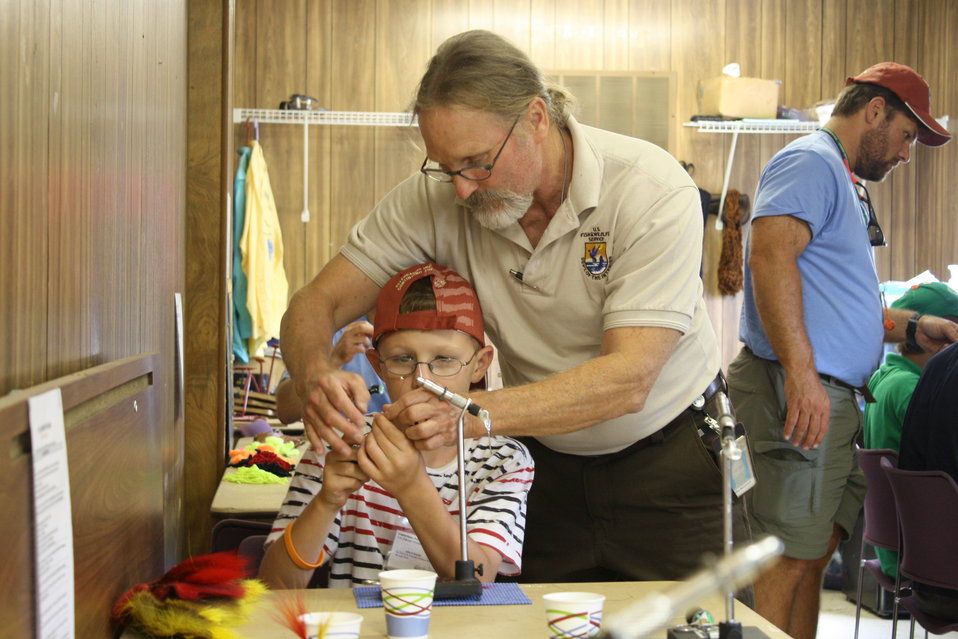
Boy Scout Jamboree 2010